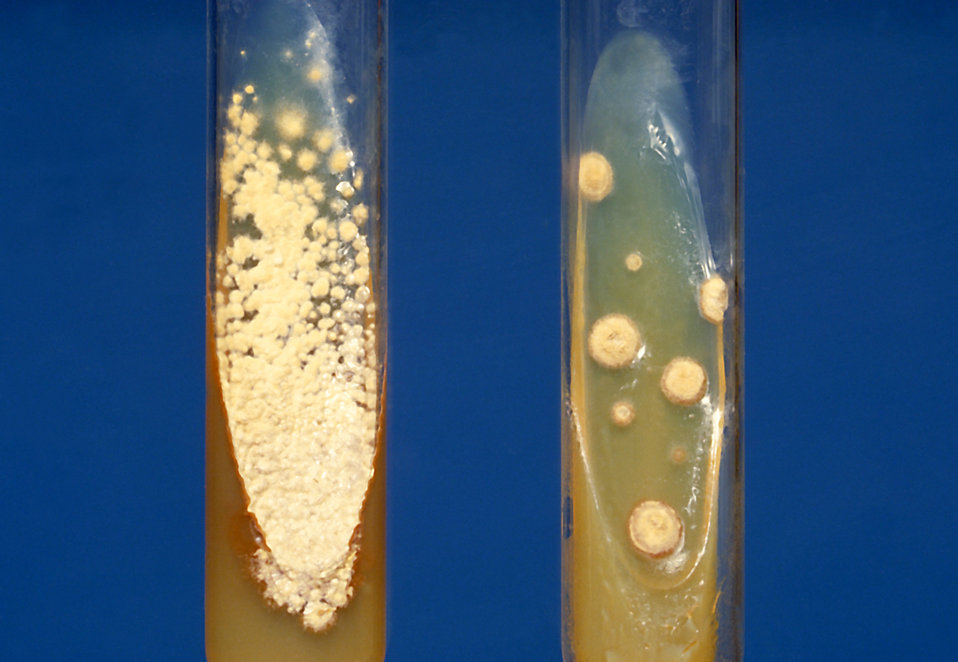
These two slant cultures grew Histoplasma capsulatum colonies: (Lt tube) Sabouraud's agar; (Rt tube) Sabhi agar.